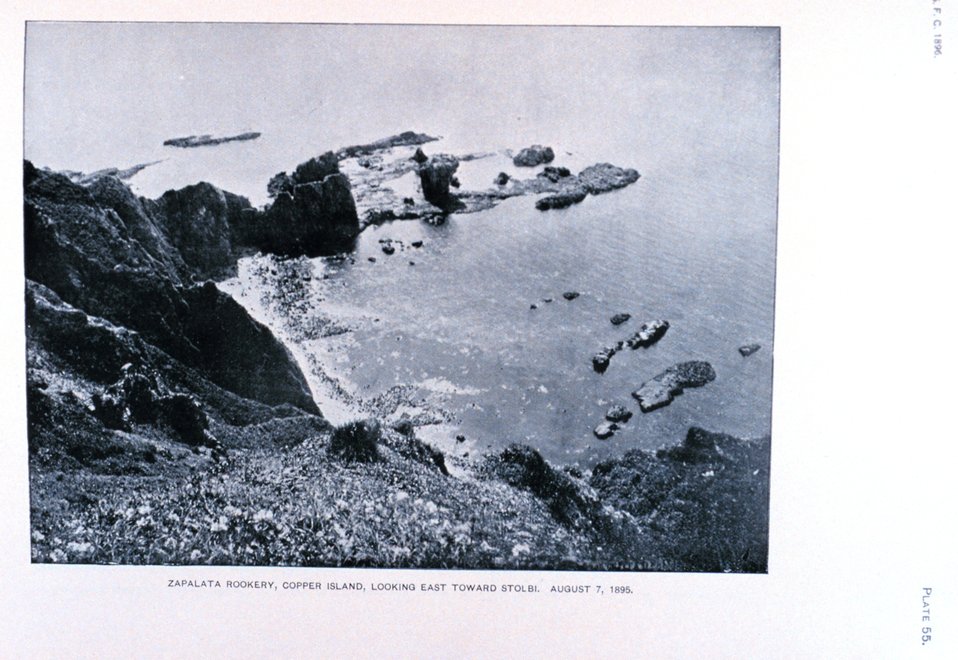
Zapalata fur seal rookery